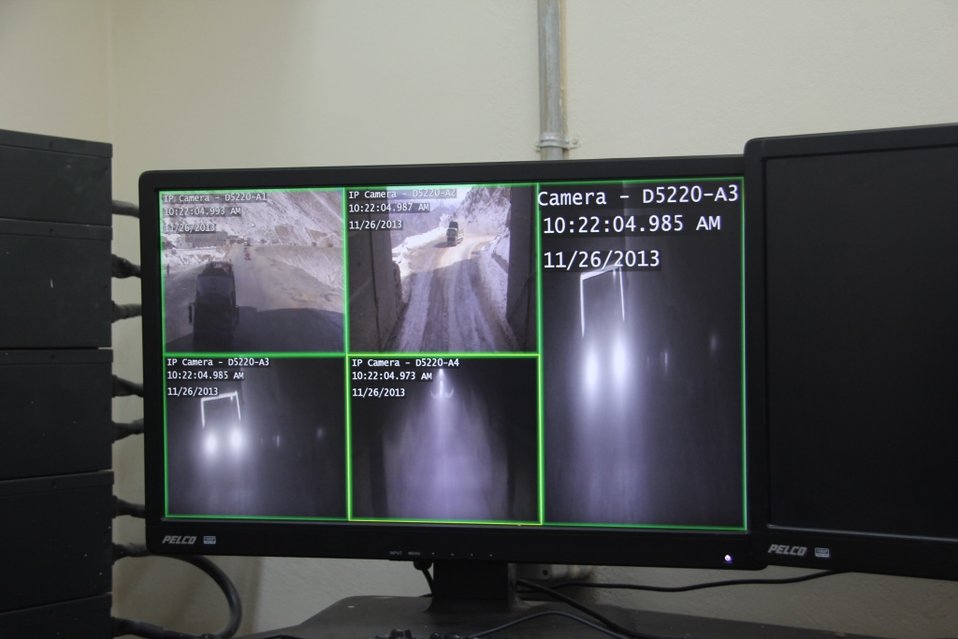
Since November, 2013, the Salang tunnel is equipped with a CCTV system (November 26, 2013)